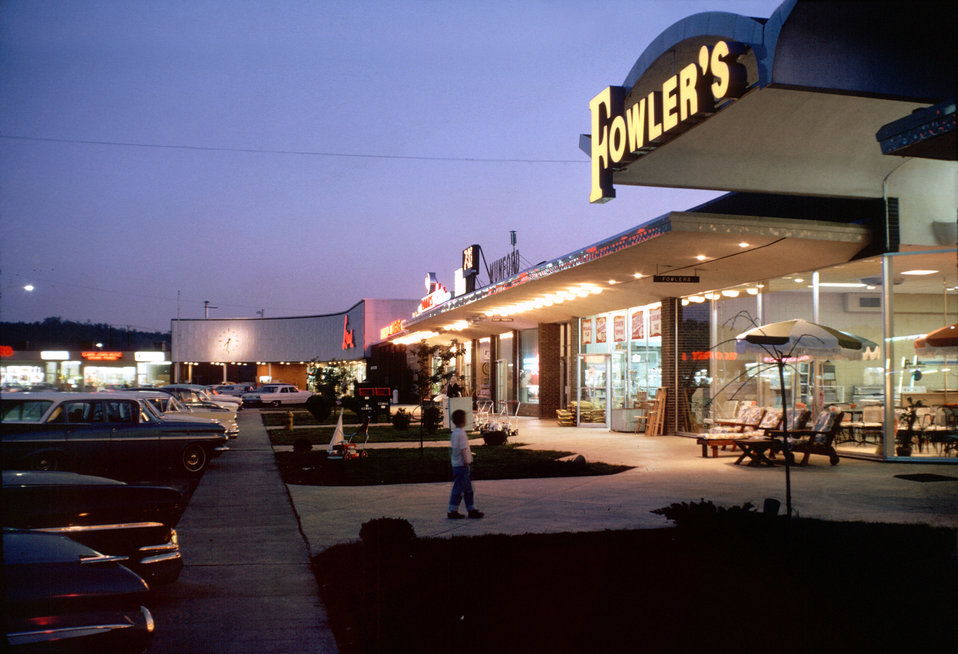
Oak Ridge Shopping Center

DOE photo by Ed Westcott

Oak Ridge Shopping Center at Night Oak Ridge Tennessee April 1966